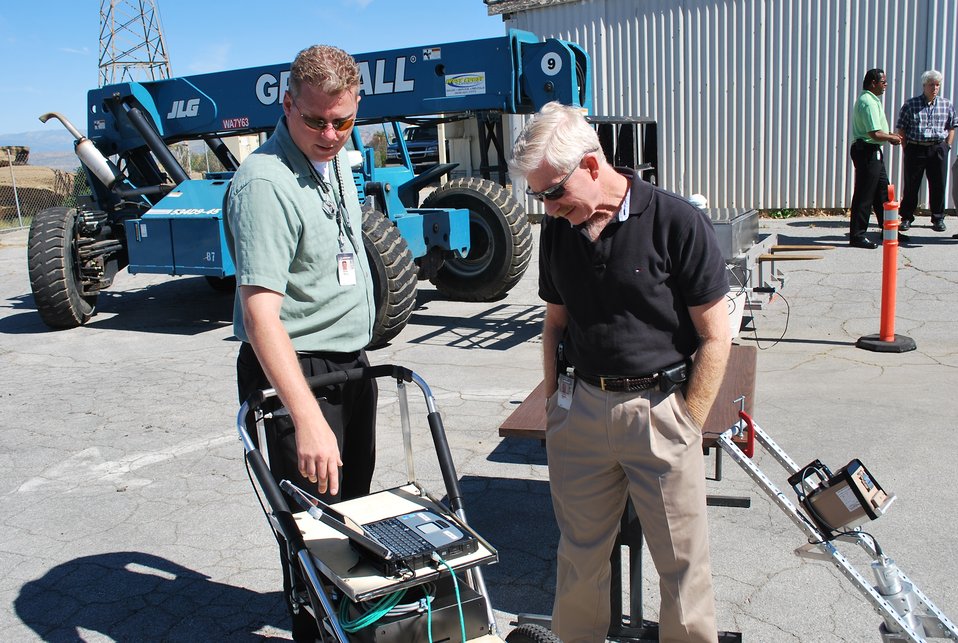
Santa Susana Field Laboratory (SSFL) Field Office Opening Ceremony

Lance Martin, left, an employee at the Environmental Energy Technology Engineering Center, explains equipment used for the radiological characterization study to a participant at the opening ceremony for the new Environmental Protection Agency Santa Susana Field Laboratory Field Office.